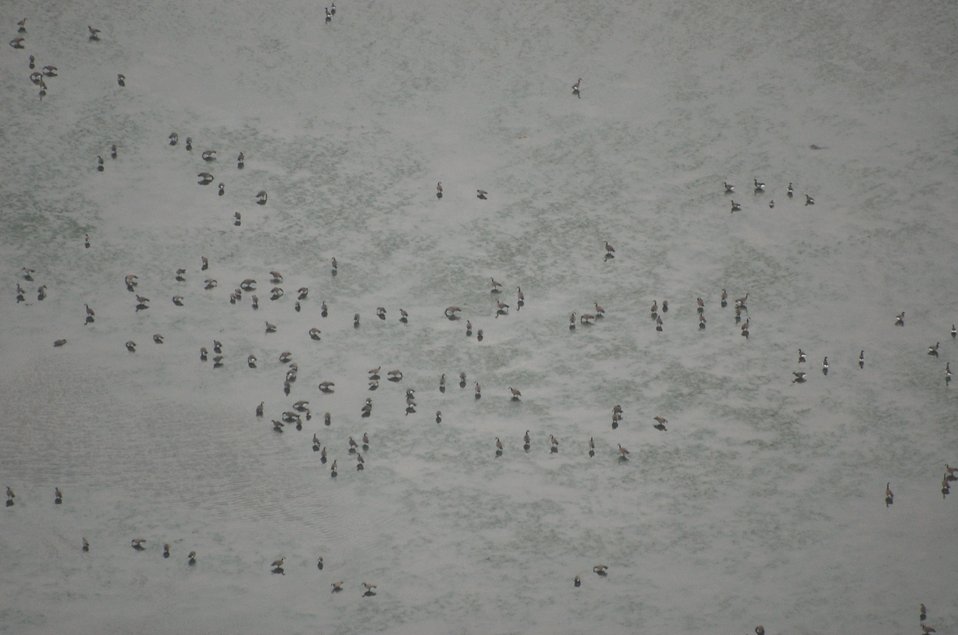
Cackling geese in Izembek lagoon

Izembek National Wildlife Refuge